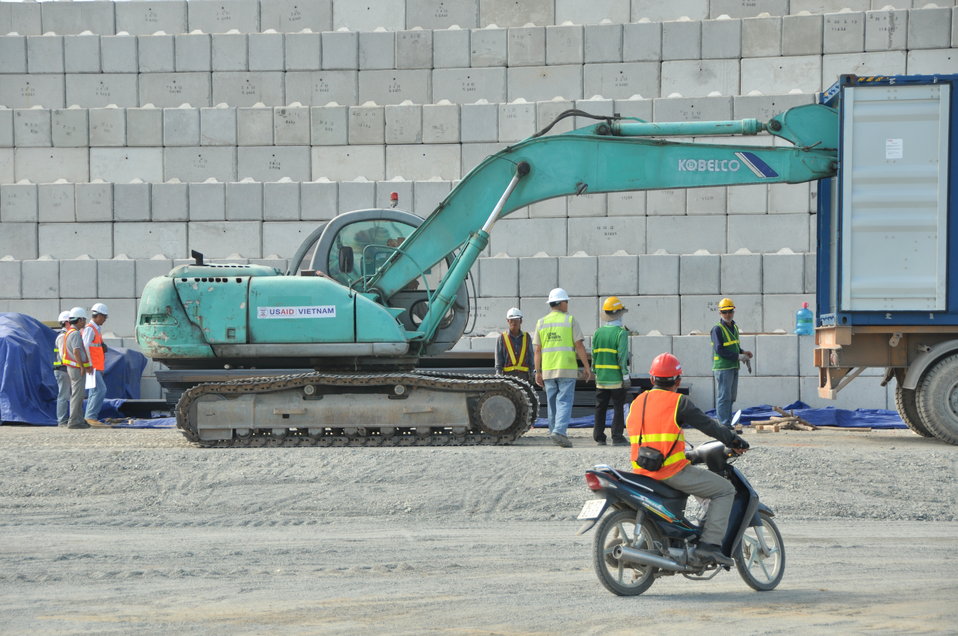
Site construction at the Environmental Remediation of Dioxin Contamination at Danang Airport

Progress at the Danang Airport remediation site
April 23, 2013